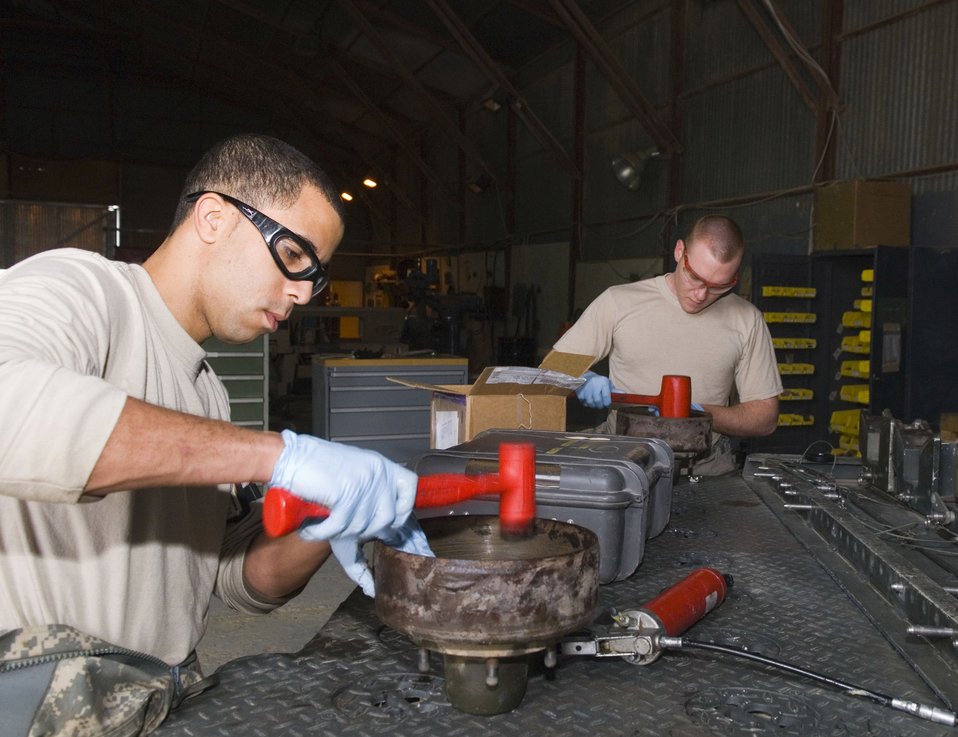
Munitions don't fly without these guys

Staff Sgt. Elvin Rose and Airman 1st Class Justin Porter, both 332nd Expeditionary Maintenance Squadron munitions equipment maintainers, secure bearing seals onto the brake drums for a munitions trailer during a 720-day inspection here, Dec. 19. Munitions equipment undergoes several types of inspections depending on how long the item has been used. Sergeant Rose and Airman Porter are deployed from Spangdahlem Air Base, Germany